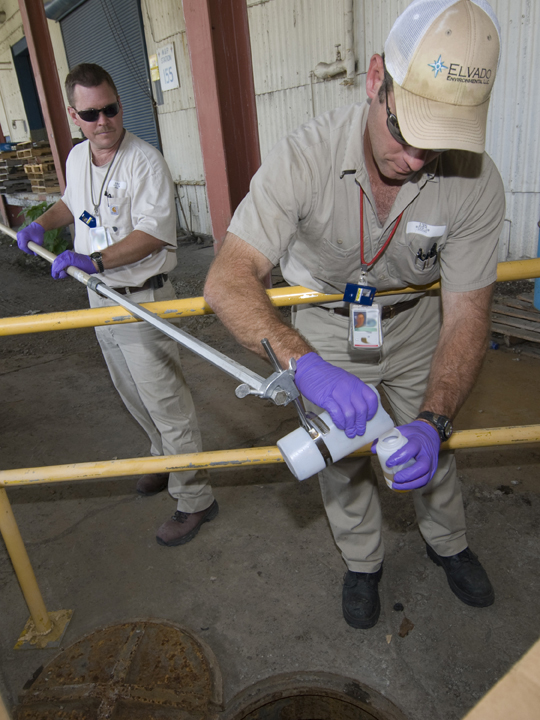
Skilled Workers Bruised by Recession Find New Start in Oak Ridge Recovery Act Work

Efforts to clean up waste from the Manhattan Project and the Cold War are under way at the Y-12 National Security Complex. The seven projects there funded by $216 million from the Recovery Act are providing work for more than 1,500 Americans, many of whom had struggled in the recent recession.

In addition to the work at Alpha 5 and Beta 4, Recovery Act projects at Y-12 include the West End Mercury Area storm sewer cleanup project, removal of soil contaminated with mercury, and the cleanup of a 7-acre scrap yard. In January 2011, Recovery Act workers completed the demolition of Building 9211 at Y-12, which reduced the footprint of the Cold War legacy by more than 83,000 square feet.